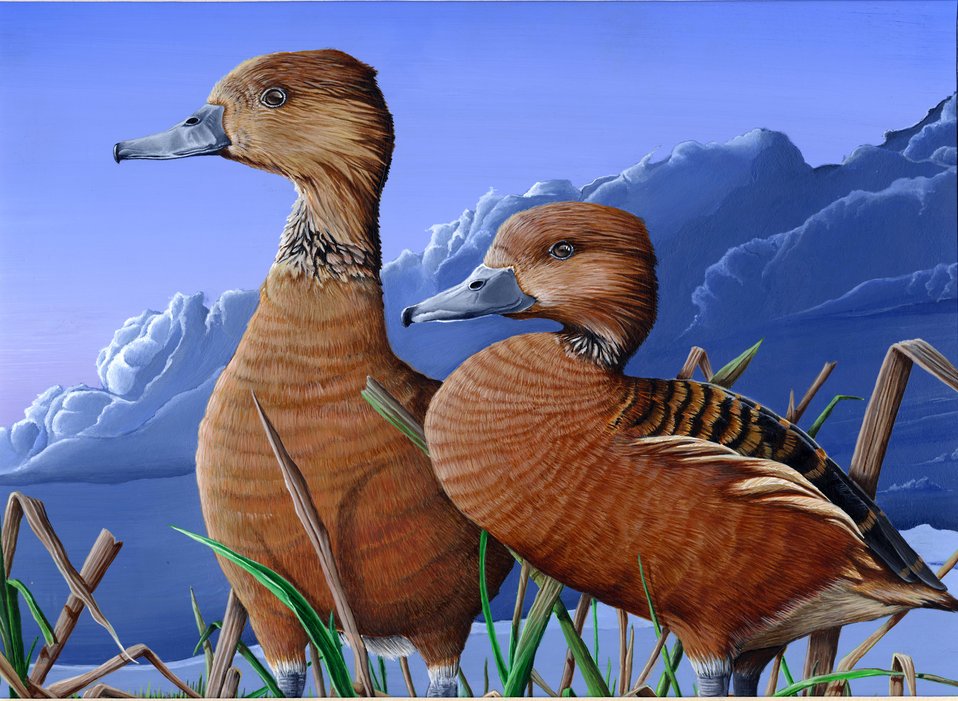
Florida

2012 Jr Duck Stamp Program
State Best of Show
Florida